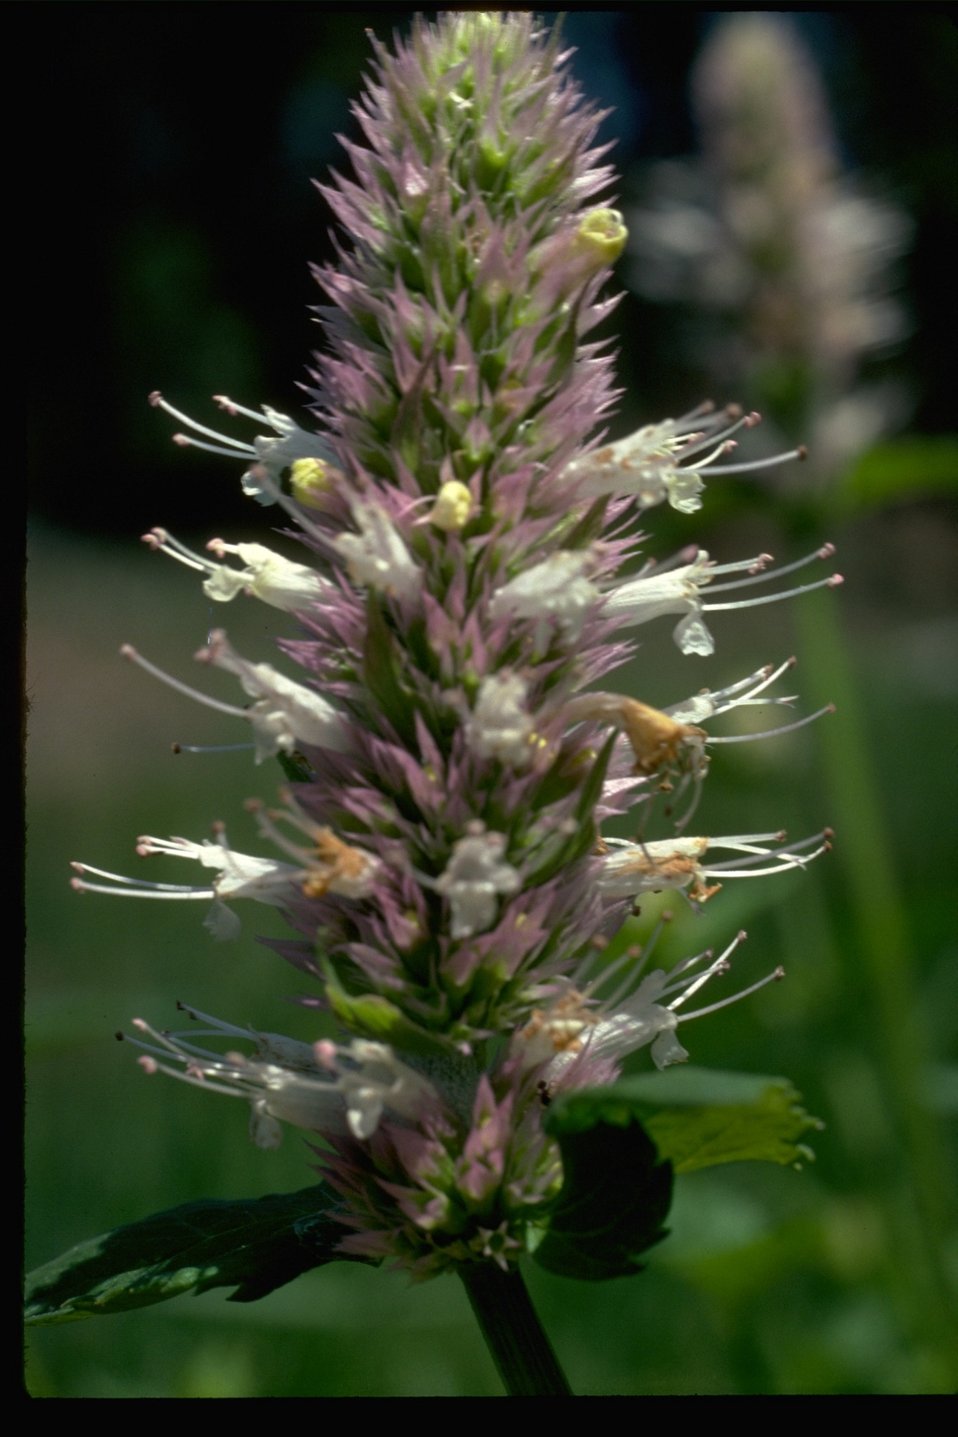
Agastache Urticifolia